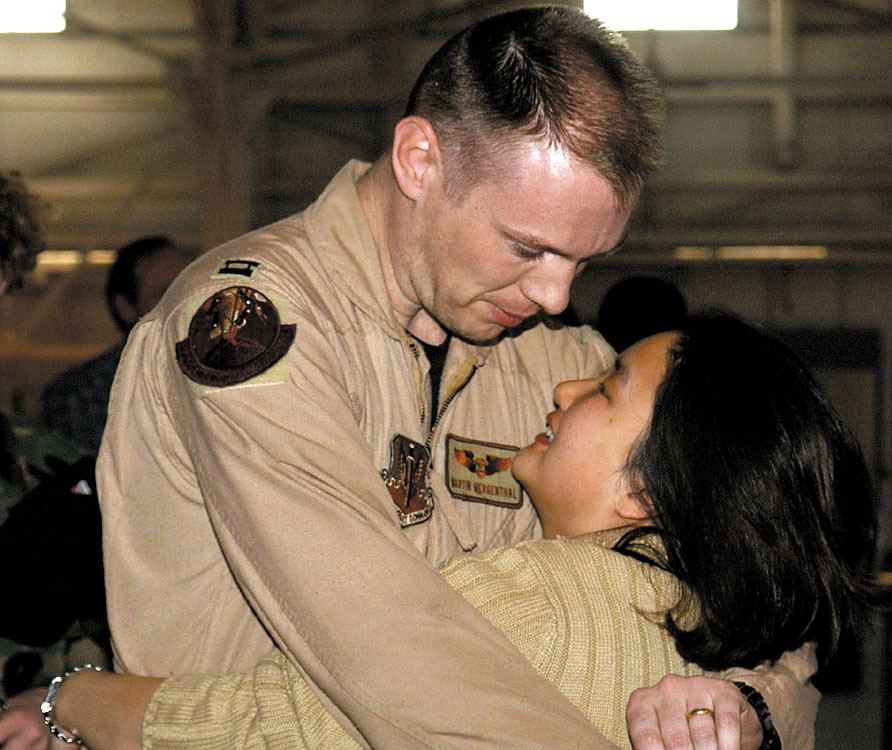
Reunited

MINOT AIR FORCE BASE, N.D. -- Capt. Martin Mergenthal, a 23rd Bomb Squadron B-52 radar navigator, is welcomed home from serving in Operation Iraqi Freedom by his wife, Kimberly.